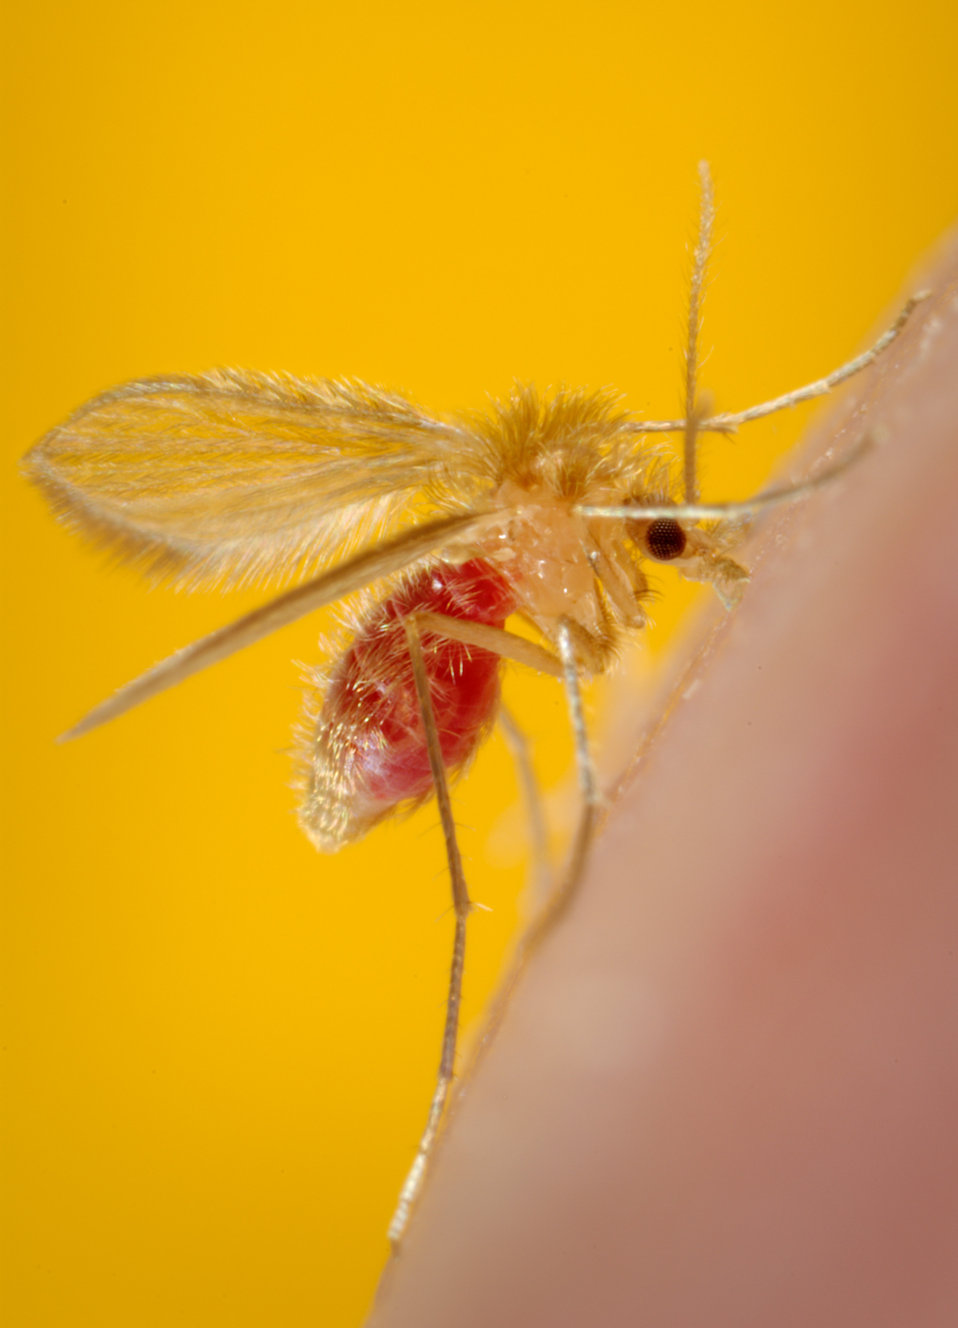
This photograph depicts a Phlebotomus papatasi sand fly, which had landed atop the skin surface of the photographer, who'd volunteered himself as host for this specimen's blood meal. The sand flies are members of the Dipteran family, Psychodidae, and the subfamily Phlebotominae. This specimen was still in the process of ingesting its bloodmeal, which is visible through its distended transparent abdomen. Sand flies such as this P. papatasi, are responsible for the spread of the vector-borne parasitic disease Leishmaniasis, which is caused by the obligate intracellular protozoa of the genus Leishmania.